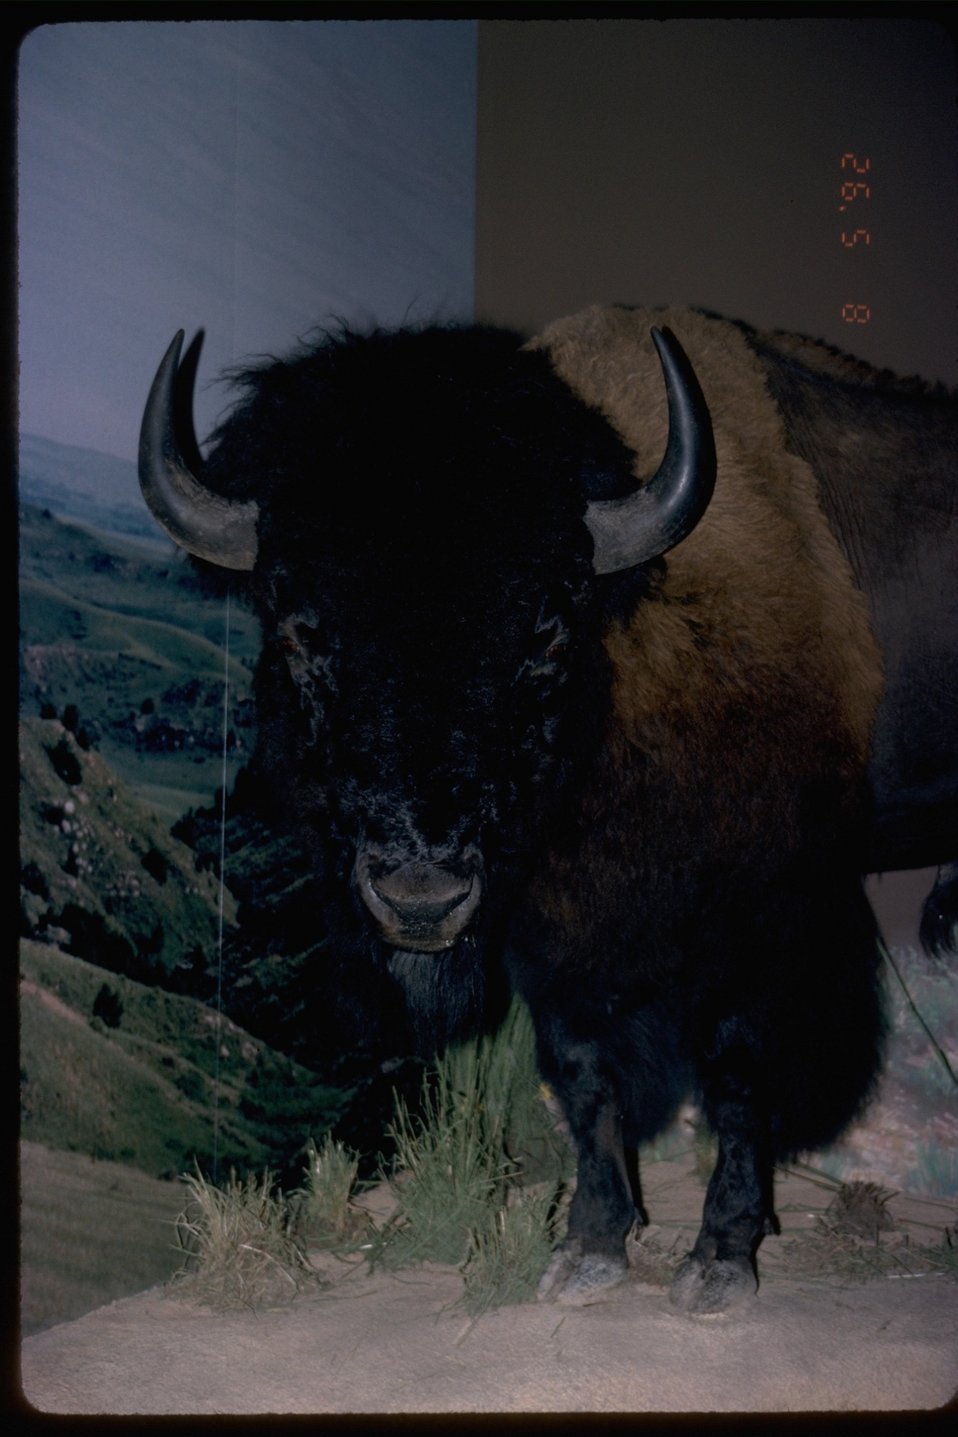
Trade camp scene with large buffalo at the NHOTIC.